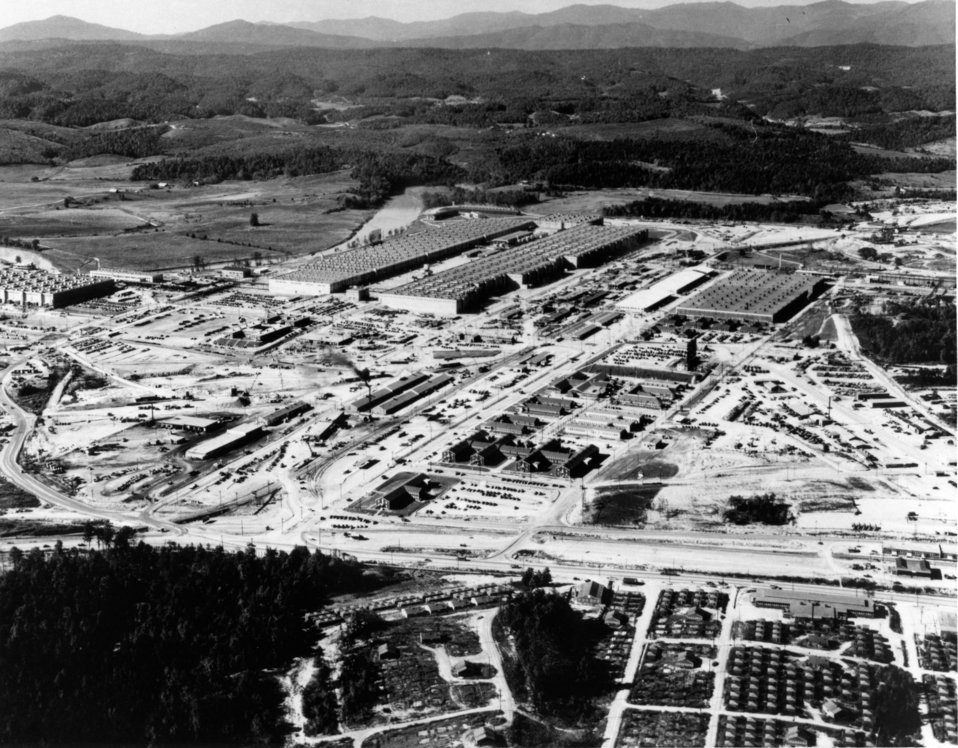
Aerial of Oak Ridge